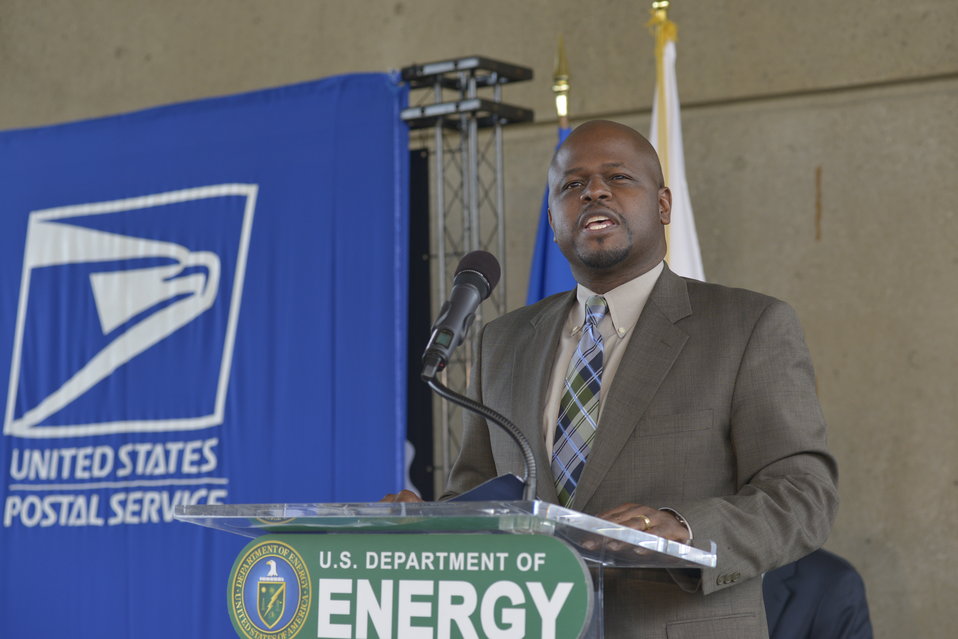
U.S Postal Services introduces a new Global: Sea Surface temperatures forever stamp at the Earth Day program at Department of Energy on April 22, 2014. ( T.Day, C.Williams, C.Anderson II, J.Colin Ph.D, Dr. K. Sullivan, K.Tobin Ph.D, W. Gicher Jr)